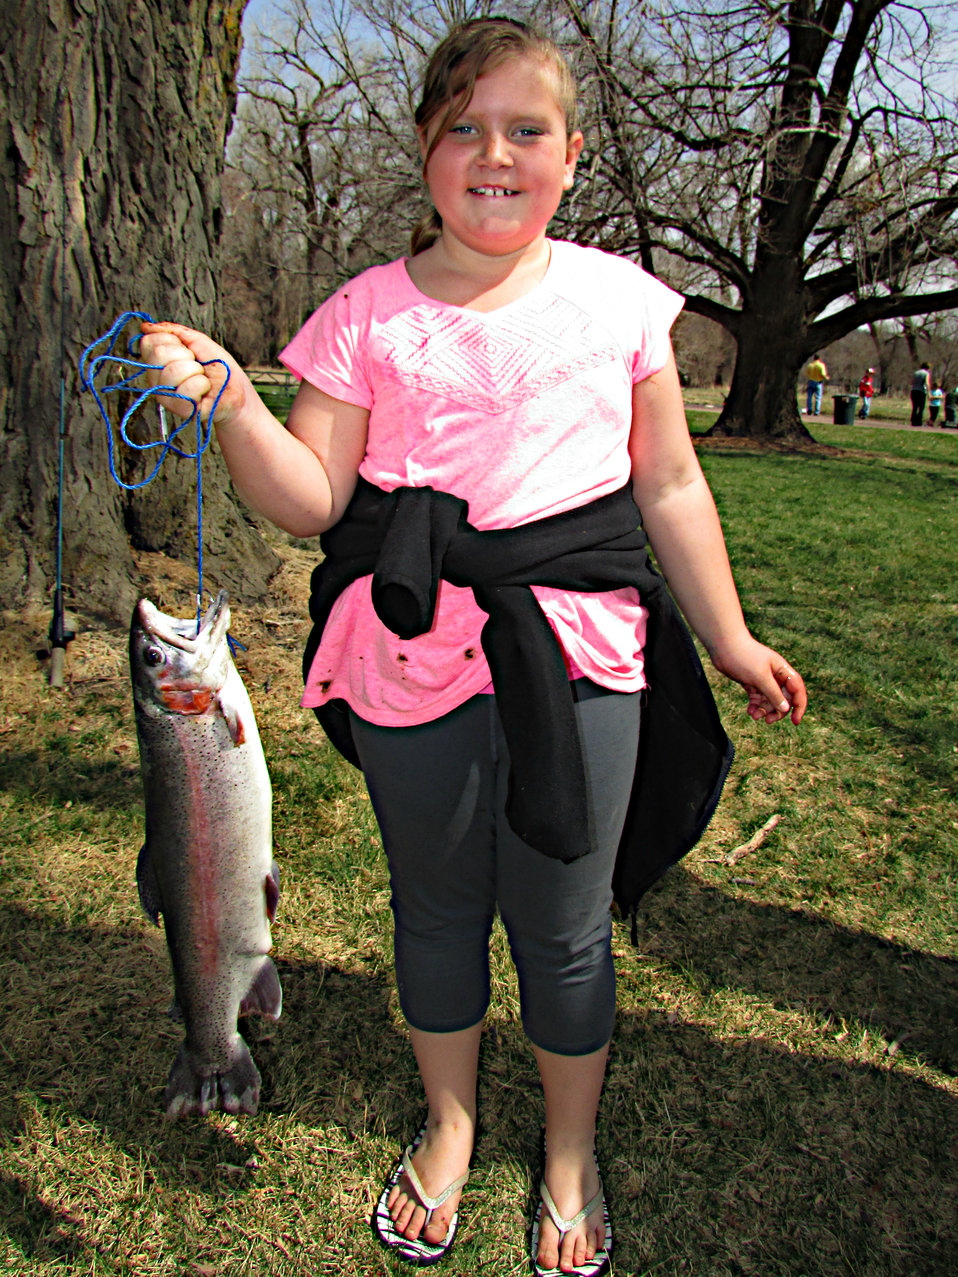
Great Catch

This was one of the bigger trout at the derby!